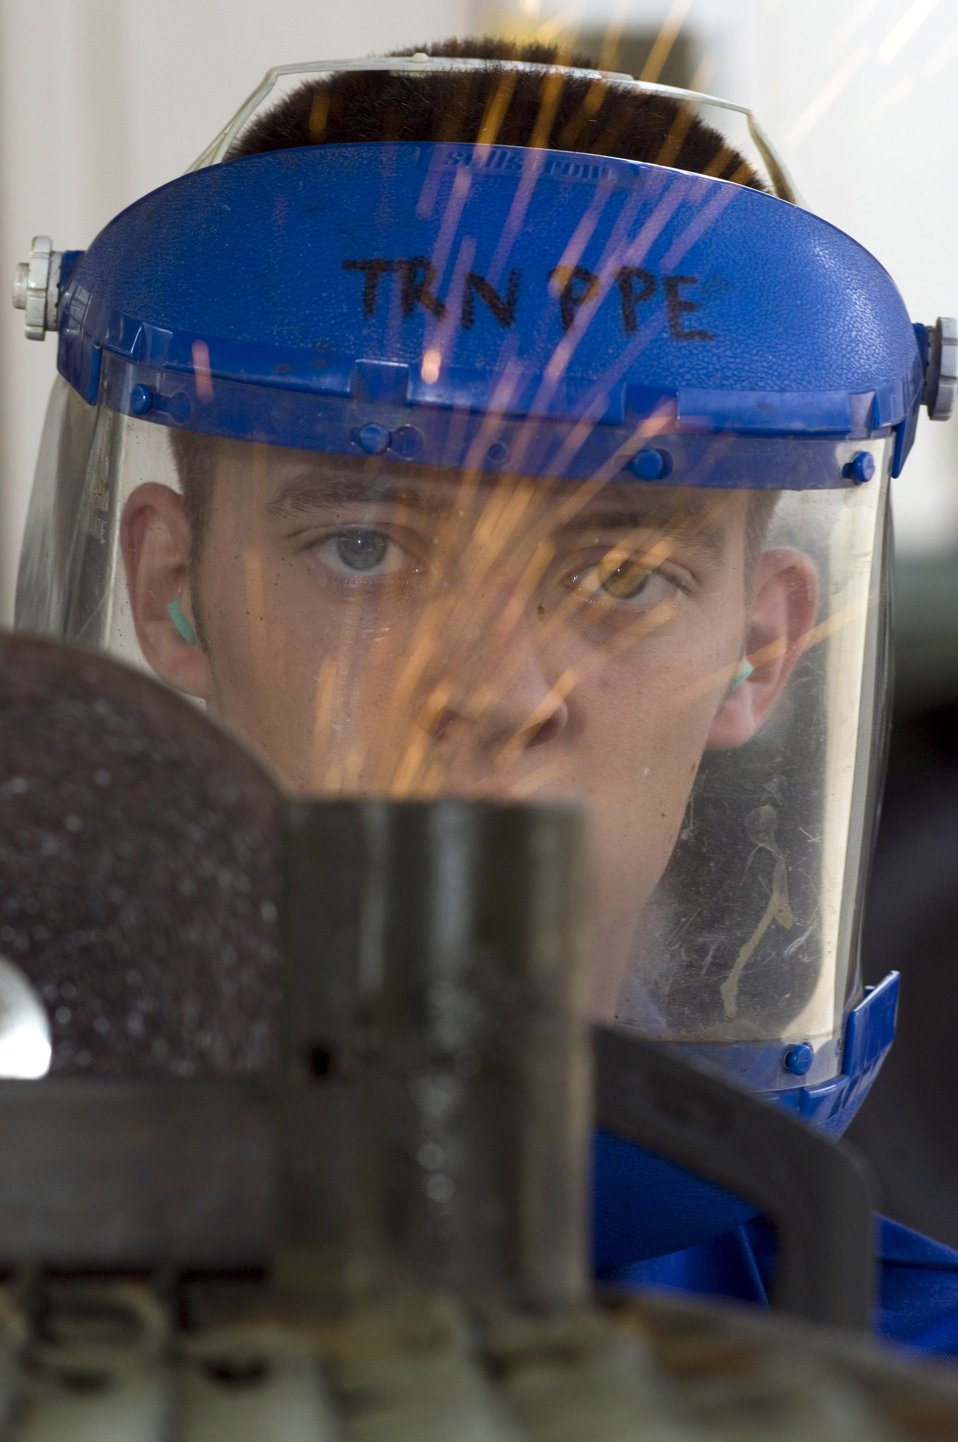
Sembach squadron maintains war reserves

Senior Airman Brian Roub removes paint from a section of an aircraft maintenance stand Sept. 20 while preparing to weld at Sembach Air Base, Germany. Airman Roub is a vehicle body mechanic with Sembach's 435th Materiel Maintenance Squadron.